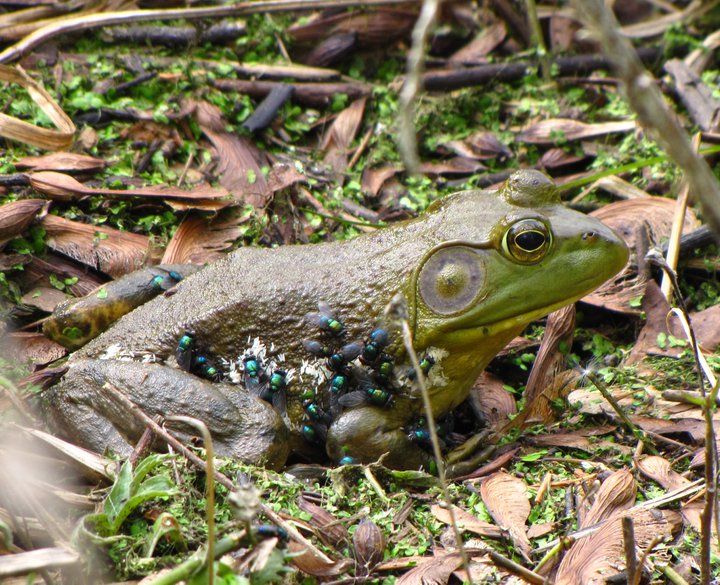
bullfrog

Port Louisa National Wildlife Refuge